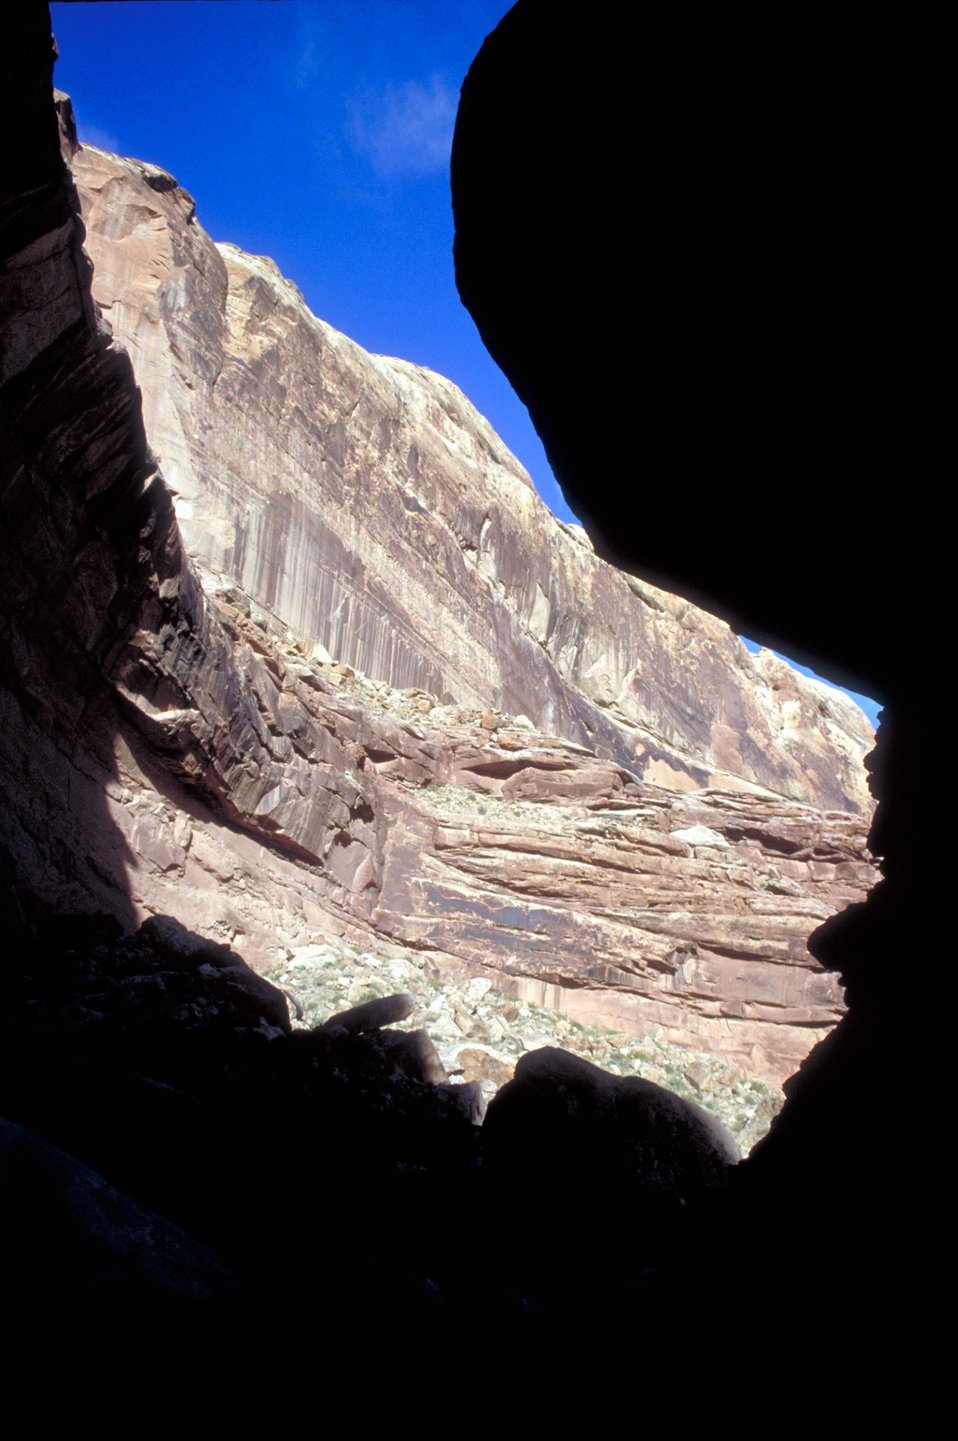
Black Dragon Wash near Green River, Utah.